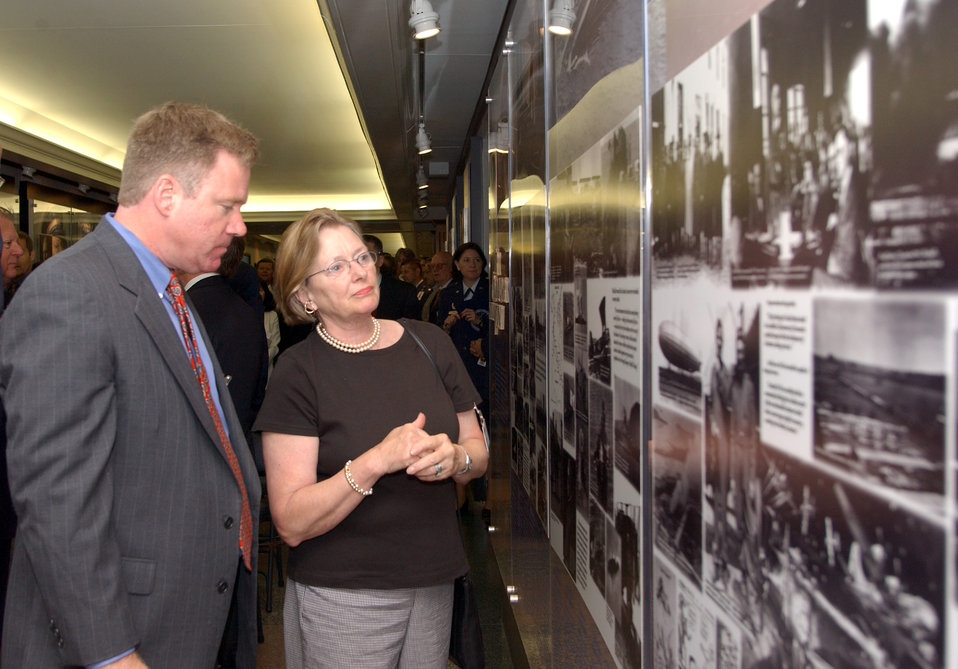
Air Force 'founding fathers' exhibit opens at Pentagon

WASHINGTON -- Cicely Banfield, granddaughter of Brig. Gen. William